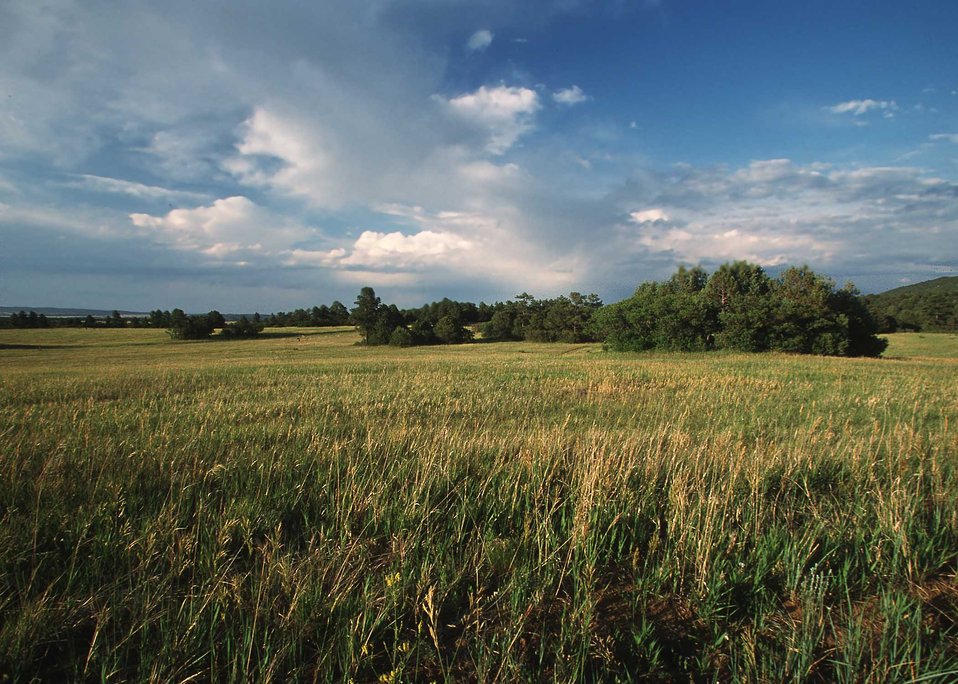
Range Pasture near Trinadad, CO.